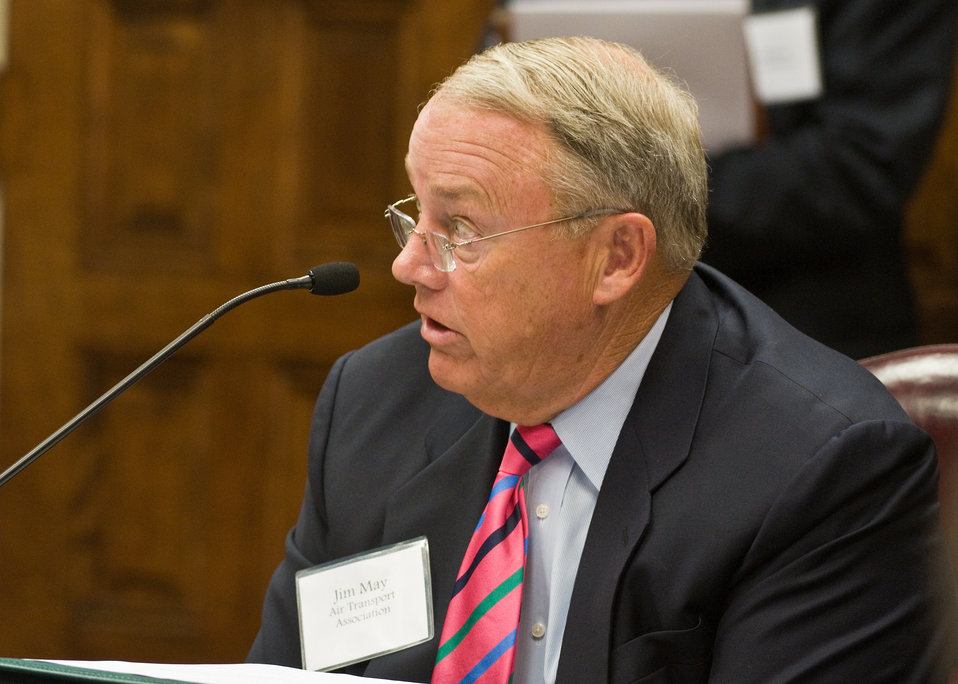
James May, President, Air Transport Association gave an aviation industry’s perspective to the United States Department of Agriculture, aviation and biofuel industry executives at the 'Farm to Fly, Sustainable Aviation Biofuel Roundtable” at the United States Department of Agriculture in Washington, DC, Wednesday, July 14, 2010. USDA Photo 10di1441-007.